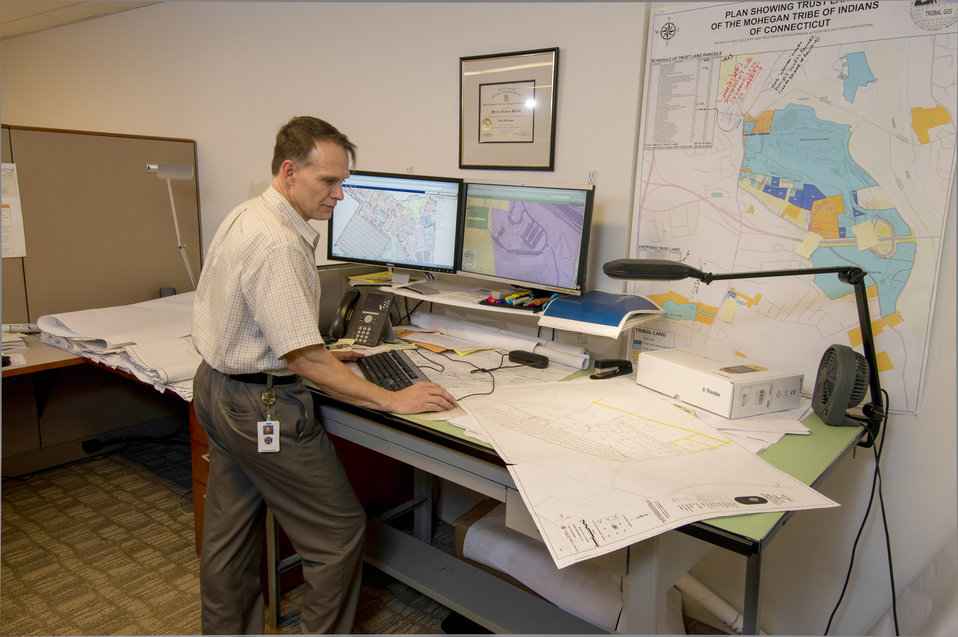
Computer-Aided Design (CAD) Document Control Manager Steve Marien works at his office in the Mohegan Tribe Community Center and Government Building in Uncasville, CT on Nov. 18, 2013. A U.S. Department of Agriculture (USDA) Rural Development (RD) Community Facility Loan was provided to the Mohegan Tribe for the construction of the Mohegan Tribe Community Center and Government Building in Uncasville, CT. USDA’s RD Community Facilities Programs makes and guarantees loans to develop essential community facilities in rural areas and towns of up to 20,000 in population. Loans and guarantees are available to public entities such as municipalities, counties, parishes, boroughs, and special-purpose districts, as well as to non-profit corporations and tribal governments. The 160,000 square foot building Center hosts an exhibit celebrating federal recognition, history of Mohegan Chiefs, a new Library and Archives space, new Arts and Crafts room, a new gymnasium, and a new community room to enjoy food and family. The Center will continue the Tribe’s plan for growth and meeting the needs of its members.